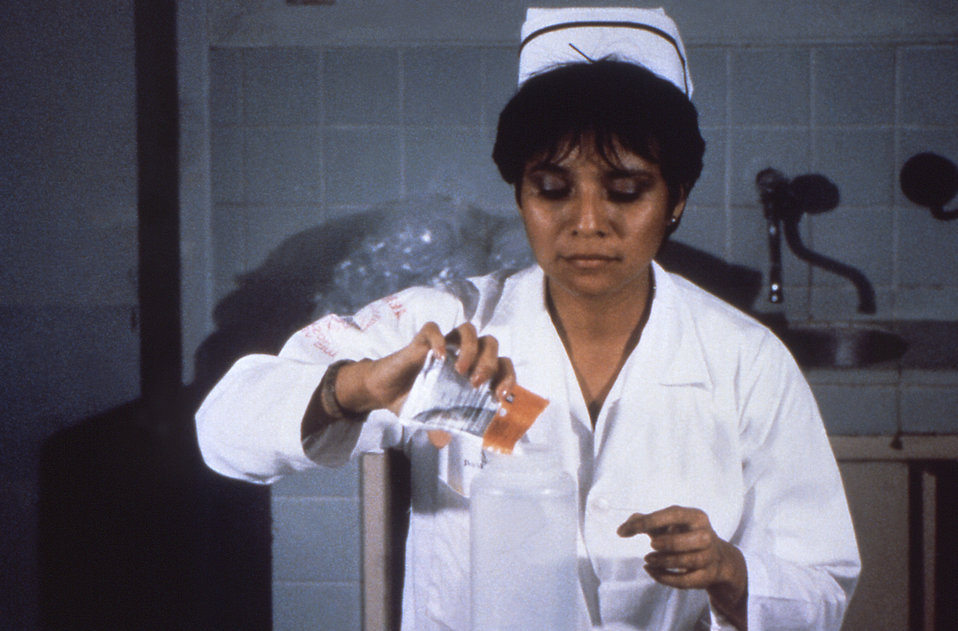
This nurse is mixing oral rehydration solution (ORS). Inexpensive foil packets are stable for many months at room temperature.